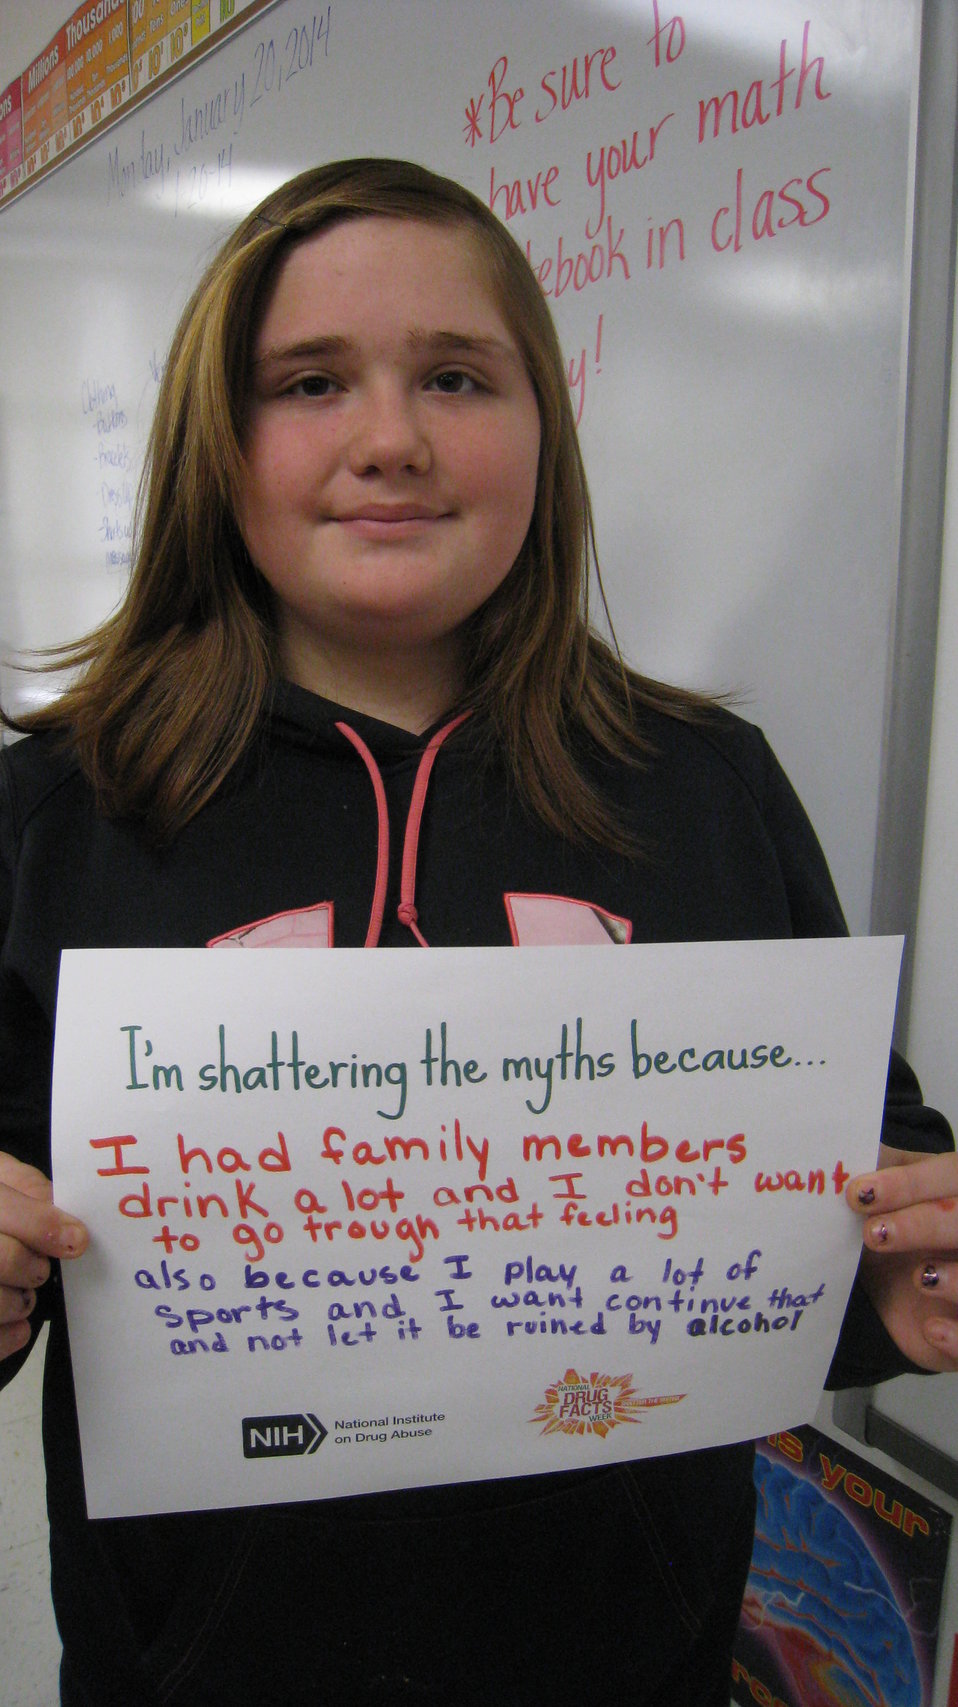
I'm Shattering the Myths Because...

Teenagers from the Van Buren County SAFE Coalition's, Youth Leadership Council (YLC) in Keosauqua, Iowa participate in various events during National Drug Facts Week, 2014.